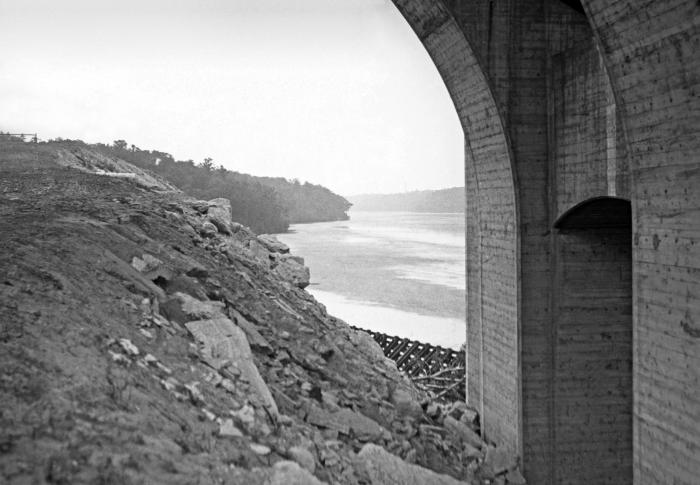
This historic view of the Mississippi River was taken from under the west arch of the Ford Bridge, in Minneapolis, Minnesota, June 4, 1933. It was taken during a Minnesota Department of Health study of the public bathing and recreation areas along the river.